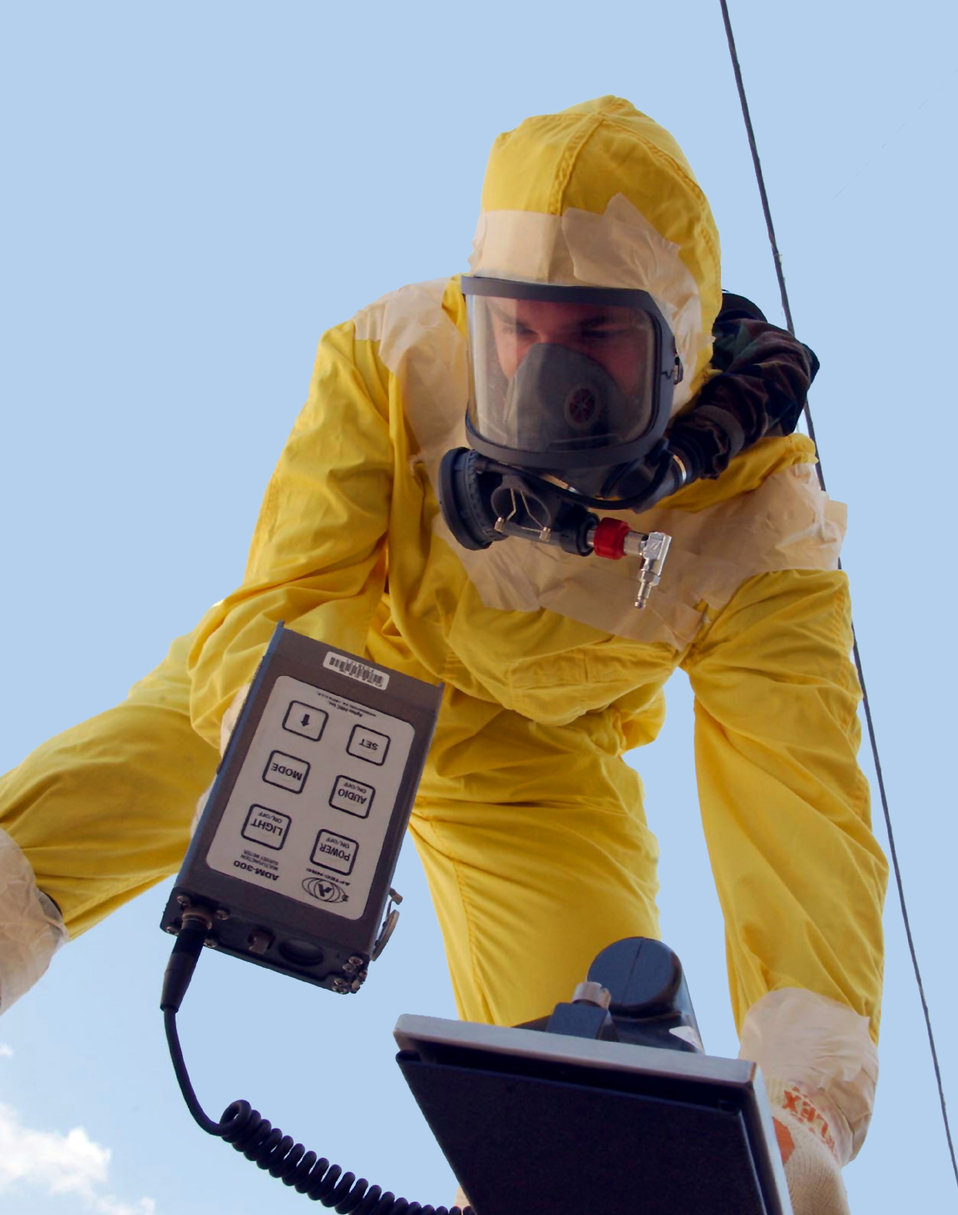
Radioactive

INCIRLIK AIR BASE, Turkey -- Airman 1st Class David Buzinski checks for radiation during an exercise here July 29. He is an explosive ordnance disposal apprentice assigned to the 39th Civil Engineer Squadron.